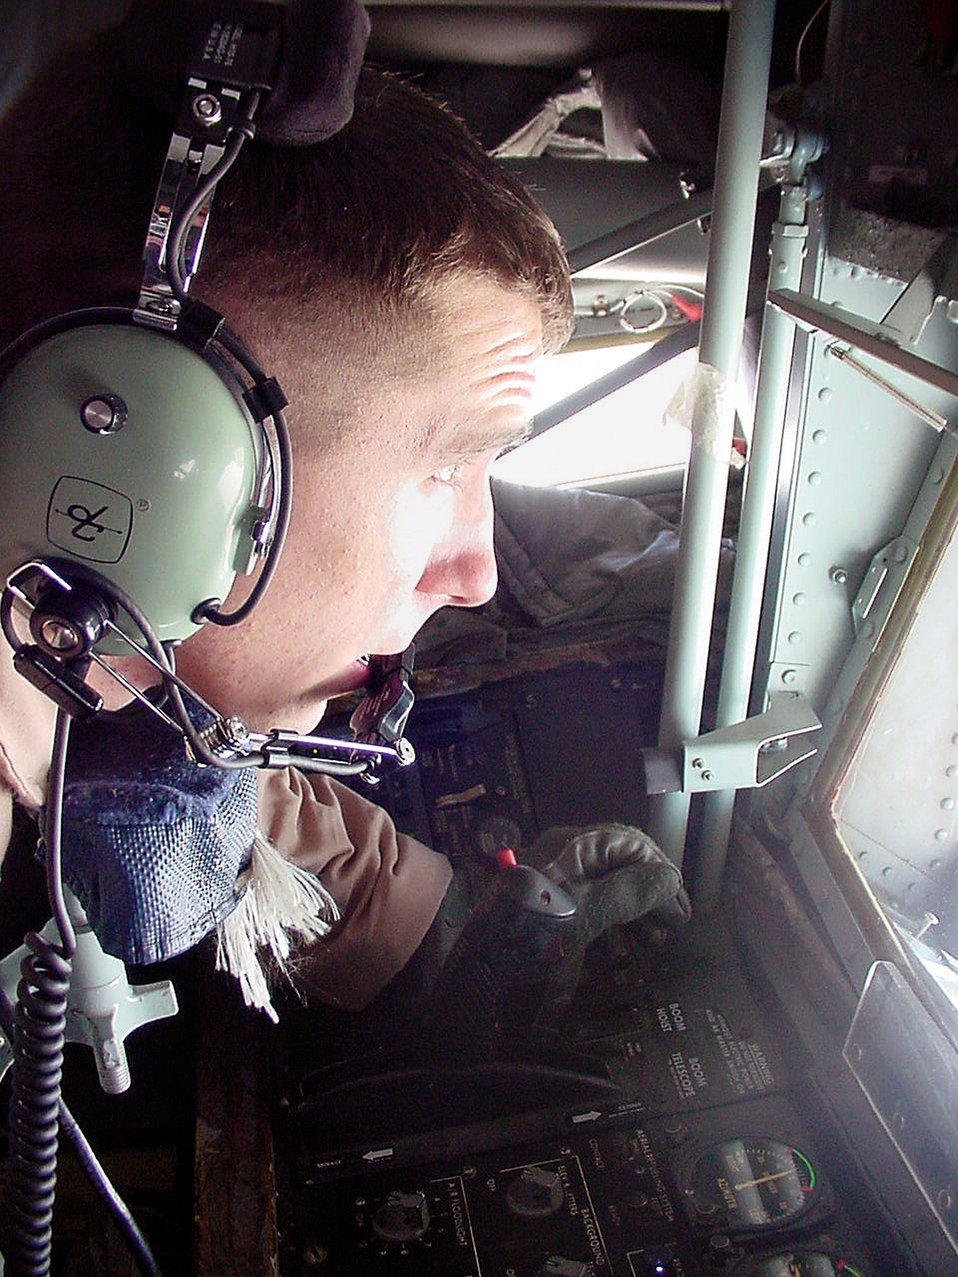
Manning the controls

SOUTHWEST ASIA -- Airman 1st Class Richard McFadden prepares to refuel an aircraft over Iraq. McFadden is a KC-135R Stratotanker boom operator assigned to the 340th Expeditionary Air Refueling Squadron at an undisclosed base in Southwest Asia. He is deployed from the 92nd Air Refueling Wing at Fairchild Air Force Base, Wash.